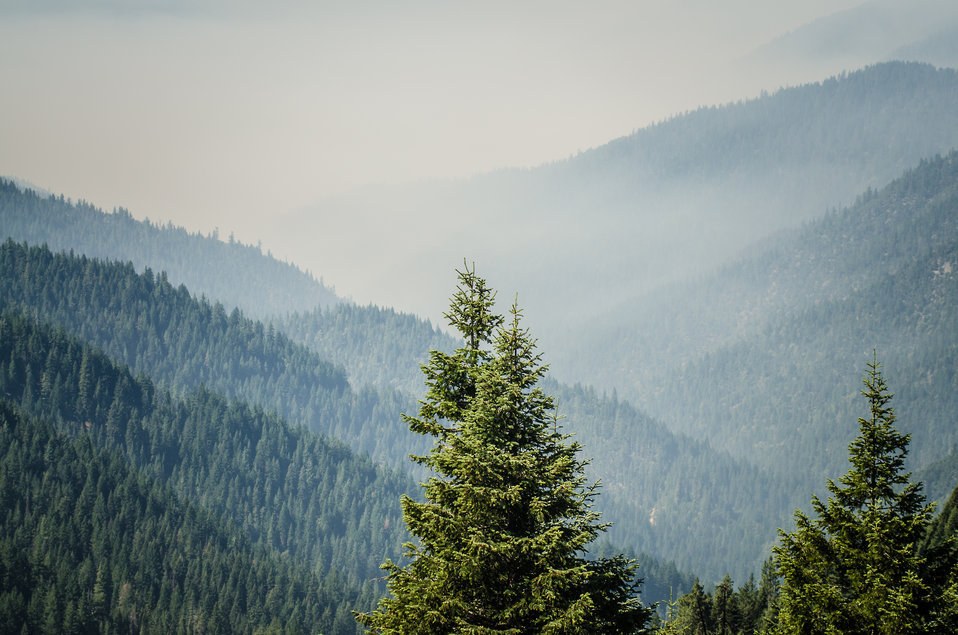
Klamath National Forest, site of the Salmon River Complex Wildlands Fire, northwest of Sawyers Bar and west of Etna and Yreka, CA, on Wednesday, Aug. 6, 2013.